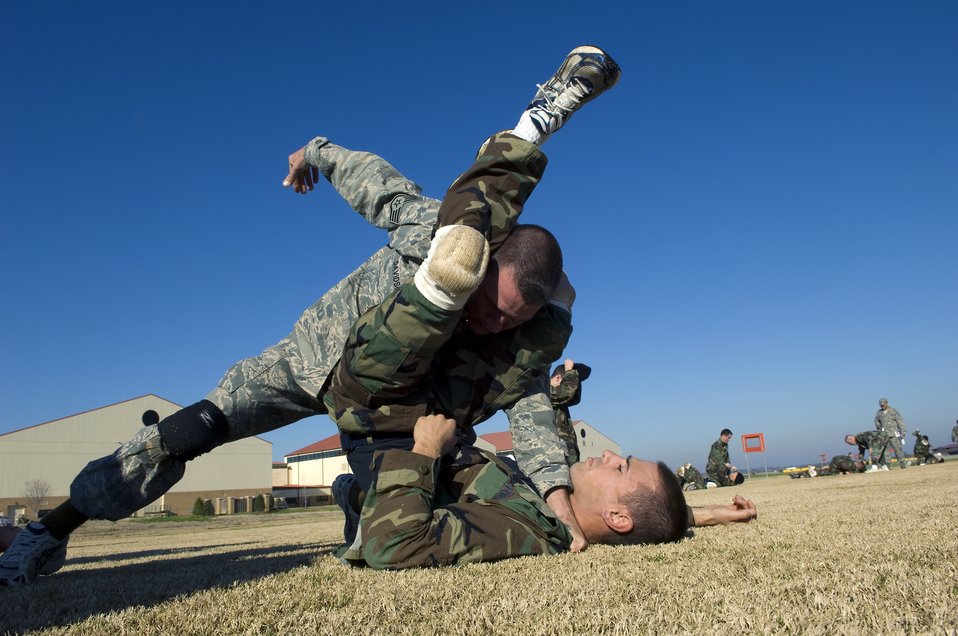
OTS begins new close combat course

Staff Sgt. Christopher Davidson, a military training instructor, demonstrates proper grappling procedures with an officer trainee Feb. 8 during the new Air Force Combative Program field exercise at the Officer Training School at Maxwell Air Force Base, Montgomery, Ala. All officer accession students are being given 11 hours of combative-skills training. Trainees learn ground fighting and basic jujitsu-style grappling moves to provide them with the confidence they need to defend themselves in combat situations.